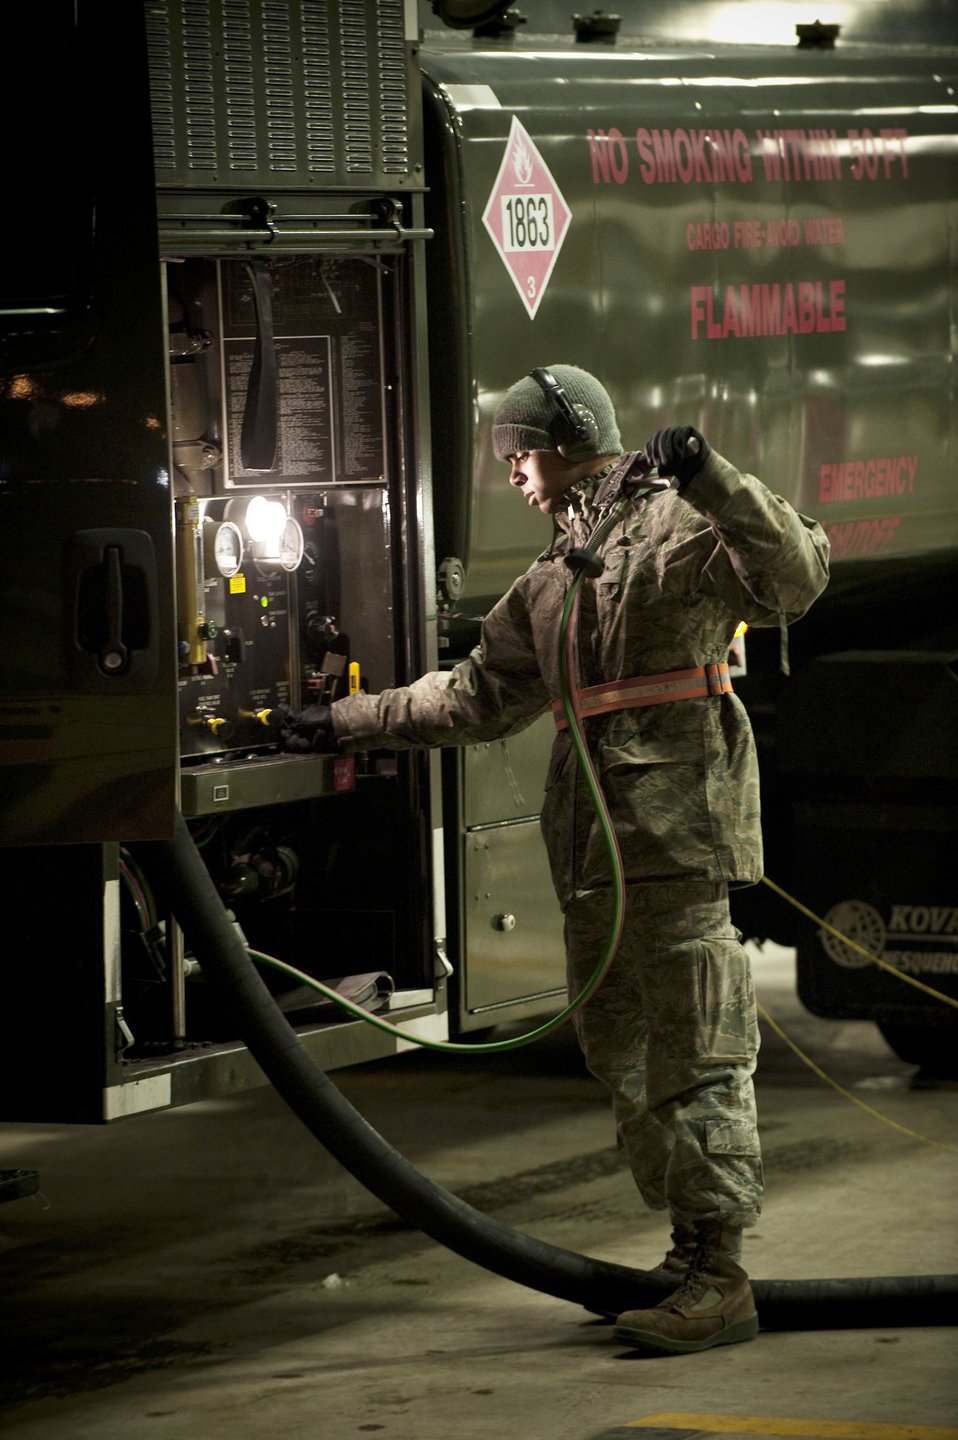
Fuels on a freezing day at Misawa

Airman 1st Class Anthony Davis, 35th Logistics Readiness Squadron refueling unit operator, retracts a hose on a fuell truck inside a hardened aircraft shelter Jan. 19, 2010, at Misawa Air Base, Japan. The hose works as an emergency cutoff switch in the event of a mishap.